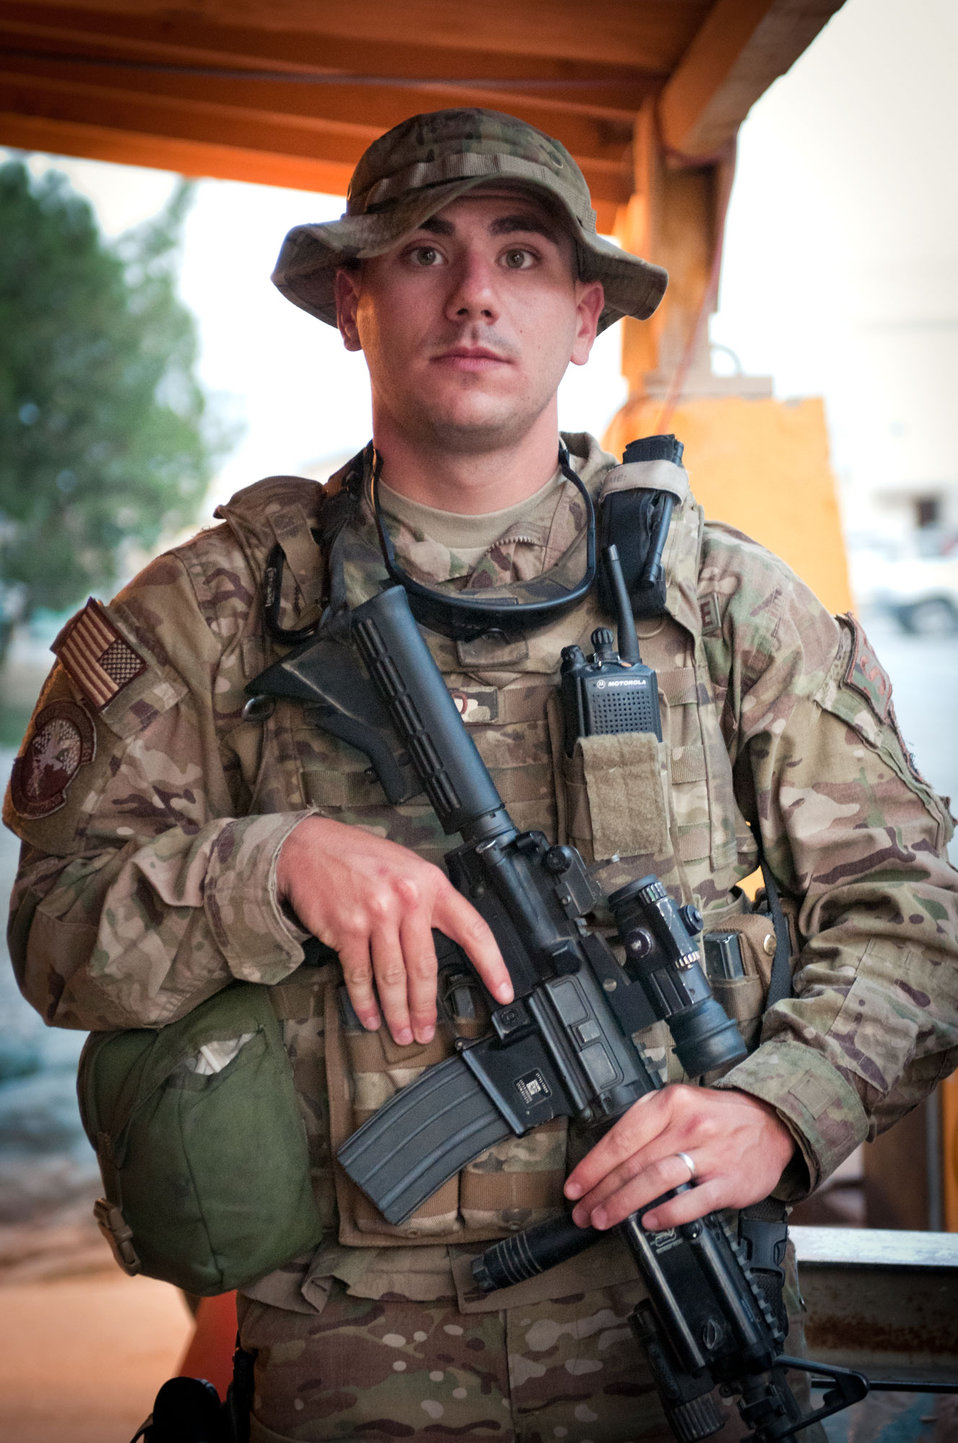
Security forces Airman 'grateful' to serve

Senior Airman Jonathon Bussard, a native of Corcoran, Calif., serves with the 455th Expeditionary Security Force Squadron in eastern Afghanistan. Even though he was only in grade school during the 9/11 terrorist attacks, Bussard said they played a part in his decision to serve.